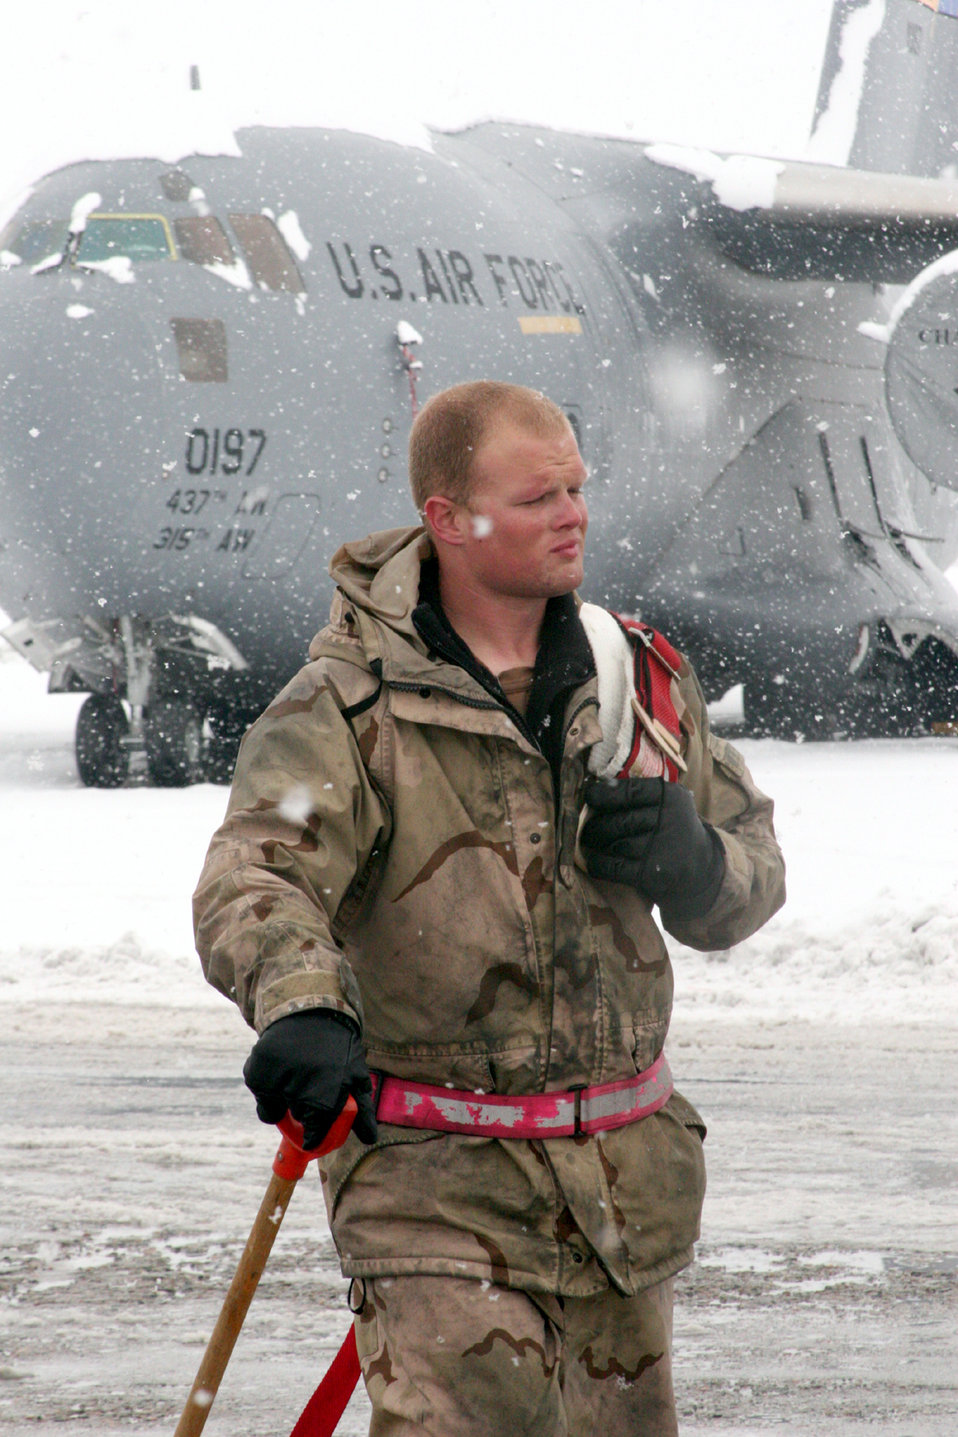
Oh snowy day

MANAS AIR BASE, Kyrgyzstan -- Senior Airman Nicholas Newsome rests between snow-shoveling sessions on the flightline here. Because of quickly accumulating snowfall, Airmen took shovels to clear the runways. The base received five inches of snow in two days. Airmen here were not fazed; they launched more than 22 sorties, handling more than 1,500 passengers. Airman Newsome is assigned to the 376th Expeditionary Aircraft Maintenance Squadron.